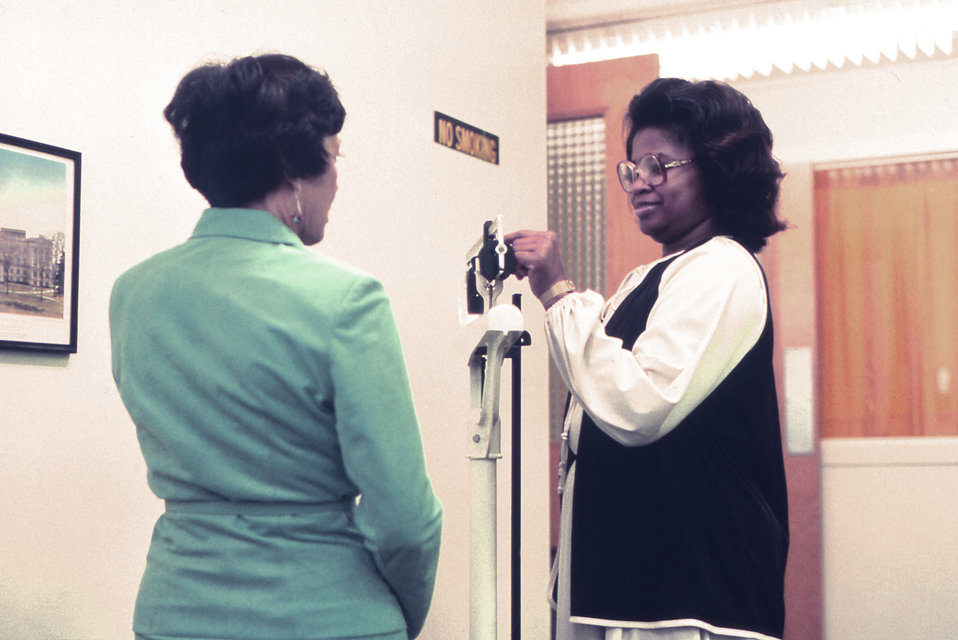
In this particular view, the woman on the right was determining her weight by standing on a balance scale in her doctor's office during her annual physical examination.